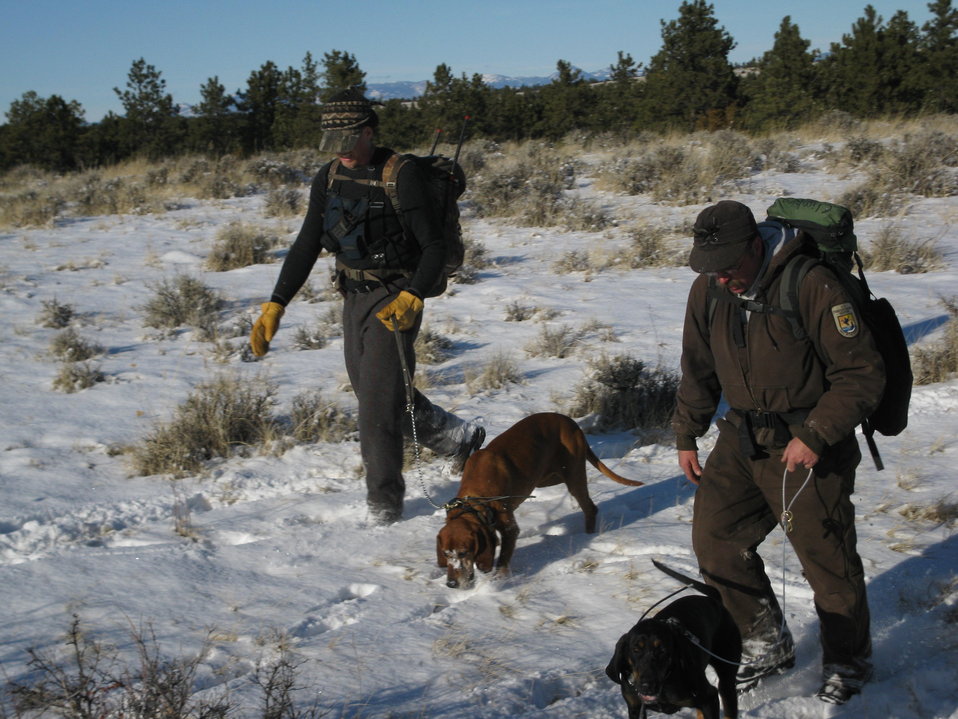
Tracking Mountain Lions

Charles M. Russell NWR staff track lions with the help of hounds.